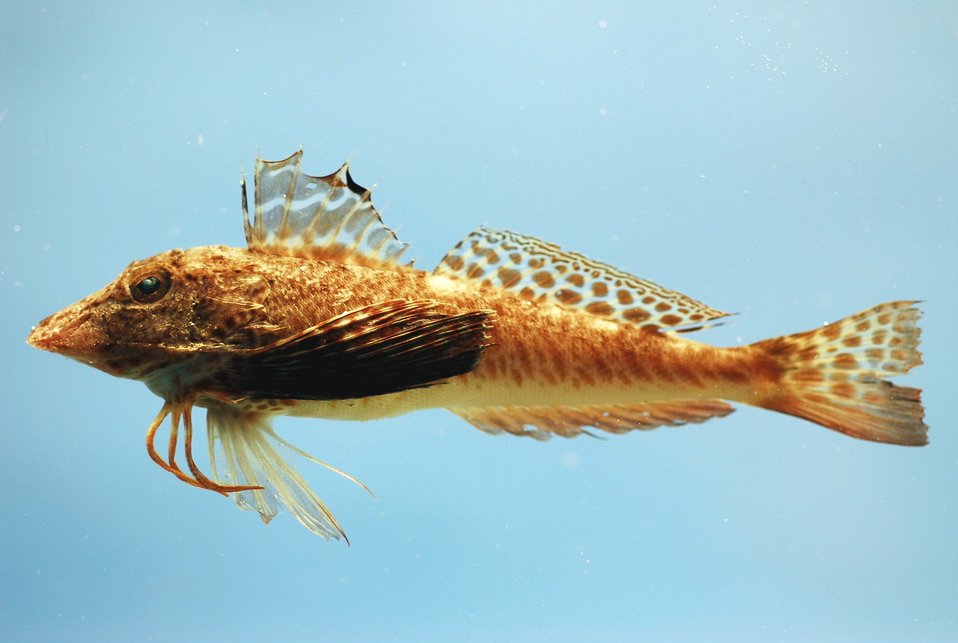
Leopard searobin ( Prionotus scitulus )